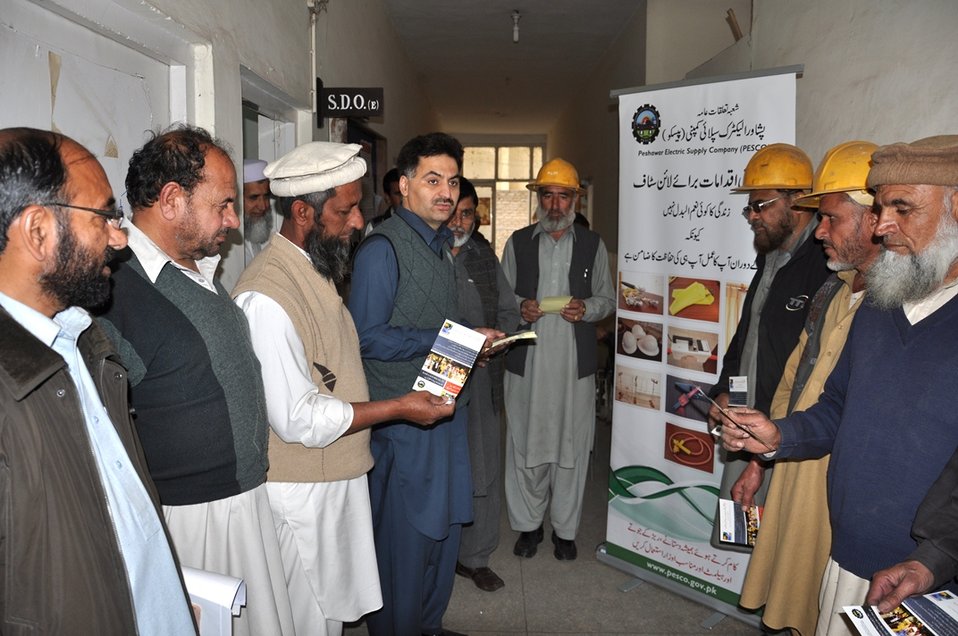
USAID helps power distribution companies to reach out consumers

The USAID Power Distribution Program is facilitating PESCO’s PR department in reaching out to consumers, through the provision of consumer outreach material. This material better assists PESCO in informing consumers about energy conservation, electricity theft and energy efficiency. PESCO is utilizing this material in its own conservation campaigns which will effectively contribute in PR capacity building and in promoting a softer image of the company.